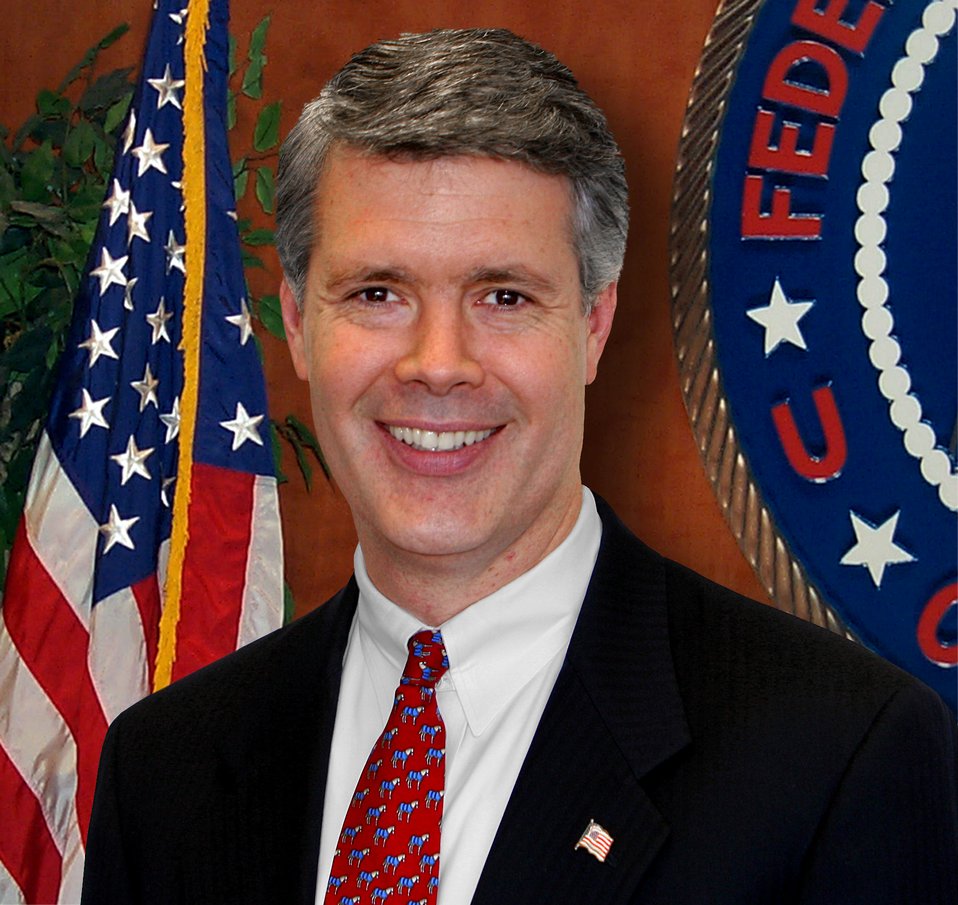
Robert McDowell

Commissioner Robert McDowell